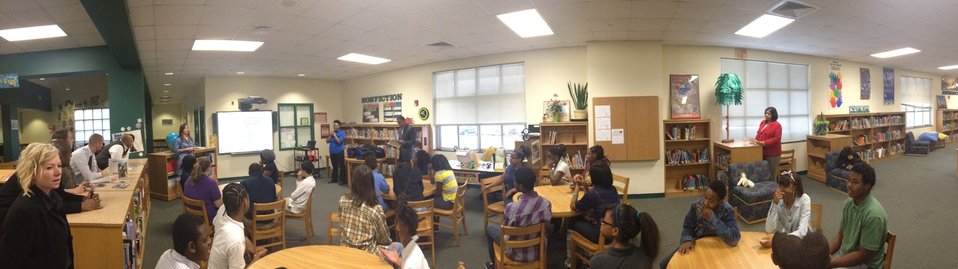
Walter G. Byers Students take Drug IQ

Charlotte, NC